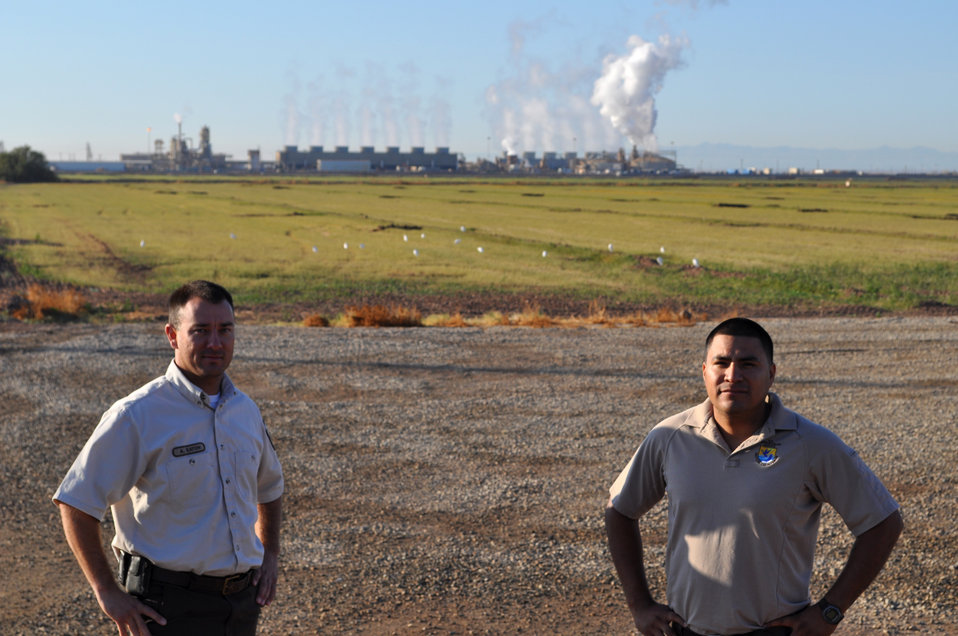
Aaron Eaton and Juan Guzman

Aaron Eaton (left) was on Active Duty with the Navy from 2001 to 2006, where he was a Petty Officer second class E-5 with the Navy SEABEES. He has as been with the Service for more than four years and is a Certified Heavy Equipment and ATV/UTV instructor. On the right is Juan Guzman, who was Sergeant E-5 with the 82nd Army Airborne Infantry from 2003 to 2008. He did three combat tours in Iraq during Operation Iraqi Freedom One and Two. He has been with the Service for two years as a maintenance worker and has contributed significantly to initiating current safety practices and standards.